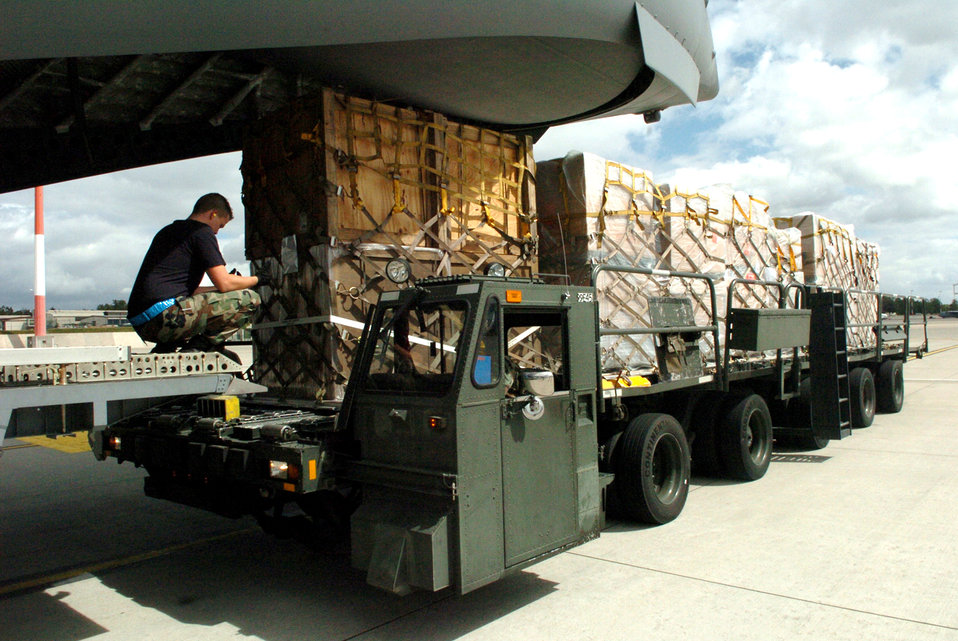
Ramsteim members deliver aid to Georgia

Airmen from the 723rd Air Mobility Squadron move humanitarian supplies into position for loading in support of the humanitarian mission to Georgia Aug. 26 at Ramstein Air Base, Germany. Twenty-eight Soldiers from the 66th Transportation Company and the 39th Transportation Battalion, and Airmen from the 723rd Air Mobility Squadron worked 36 hours to palletize more than 75,000 pounds of emergency shelter items and medical supplies which include tents, blankets, bedding, hygiene items, clothing, beds, cots, and medical supplies in order to support this mission.